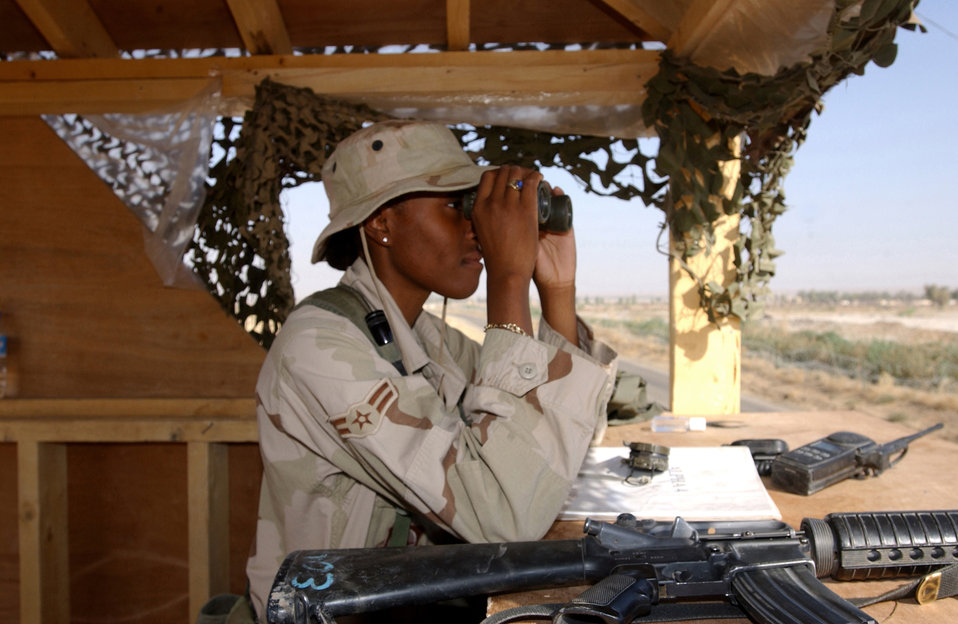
Protecting the wire

KIRKUK AIR BASE, Iraq -- Airman 1st Class Clashena Riley scans the base perimeter here. Riley is deployed to the 506th Expeditionary Security Forces Squadron from MacDill Air Force Base, Fla.